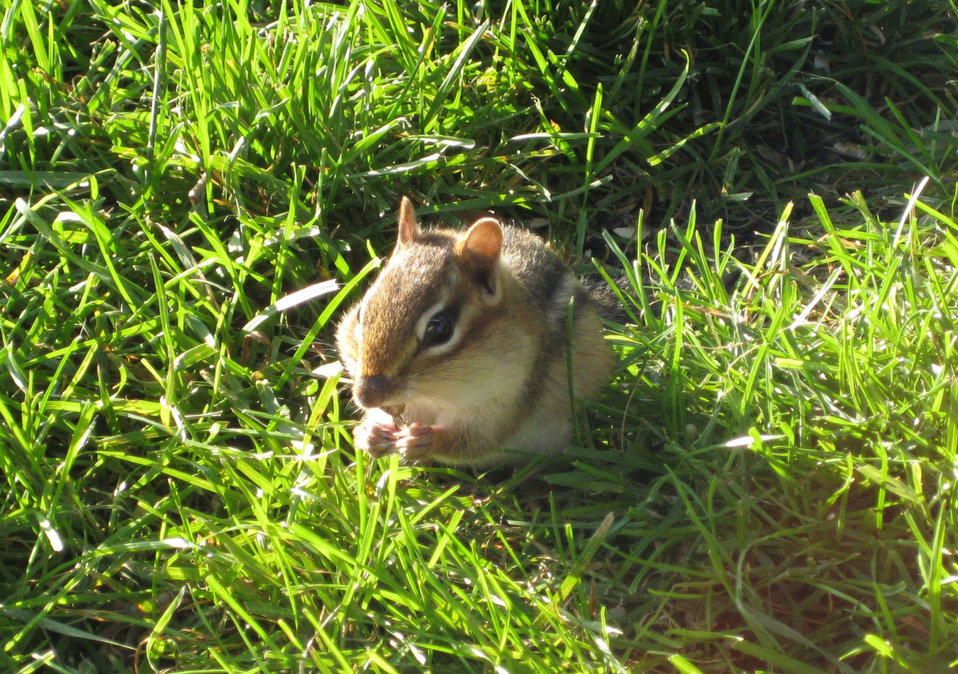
Chipmunk eating a sunflower seed.